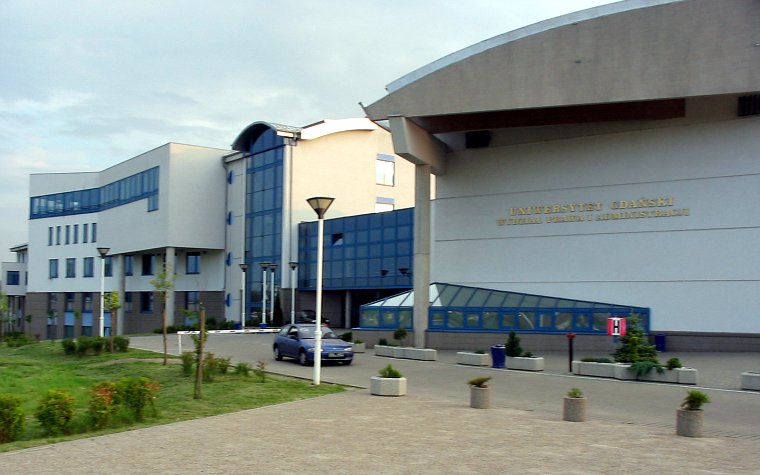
Gdańsk University - Faculty of Law and Administration (Poland) Polski: Uniwersytet Gdański - Wydział Prawa i Administracji